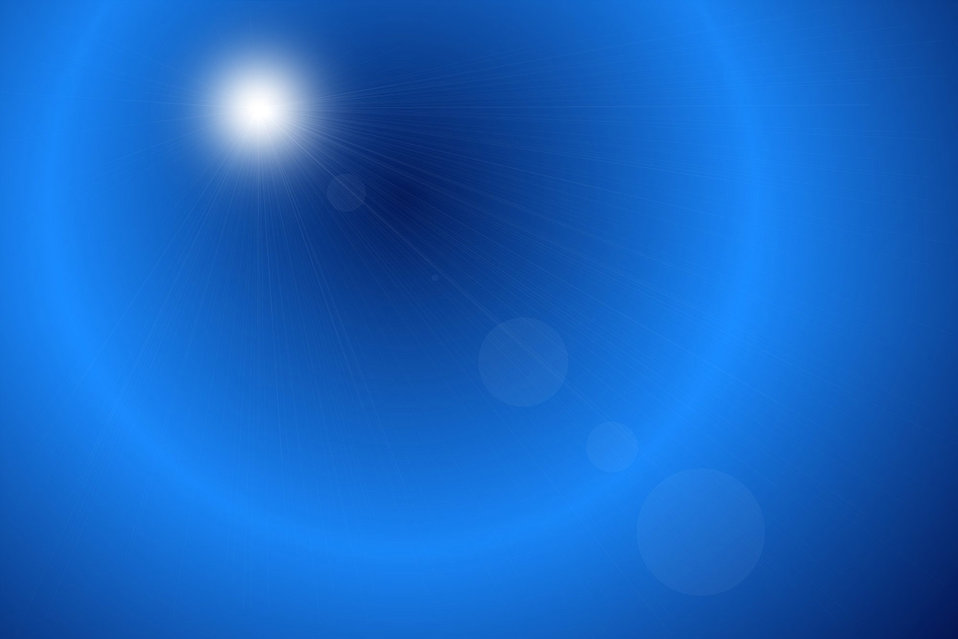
Blue sunburst.